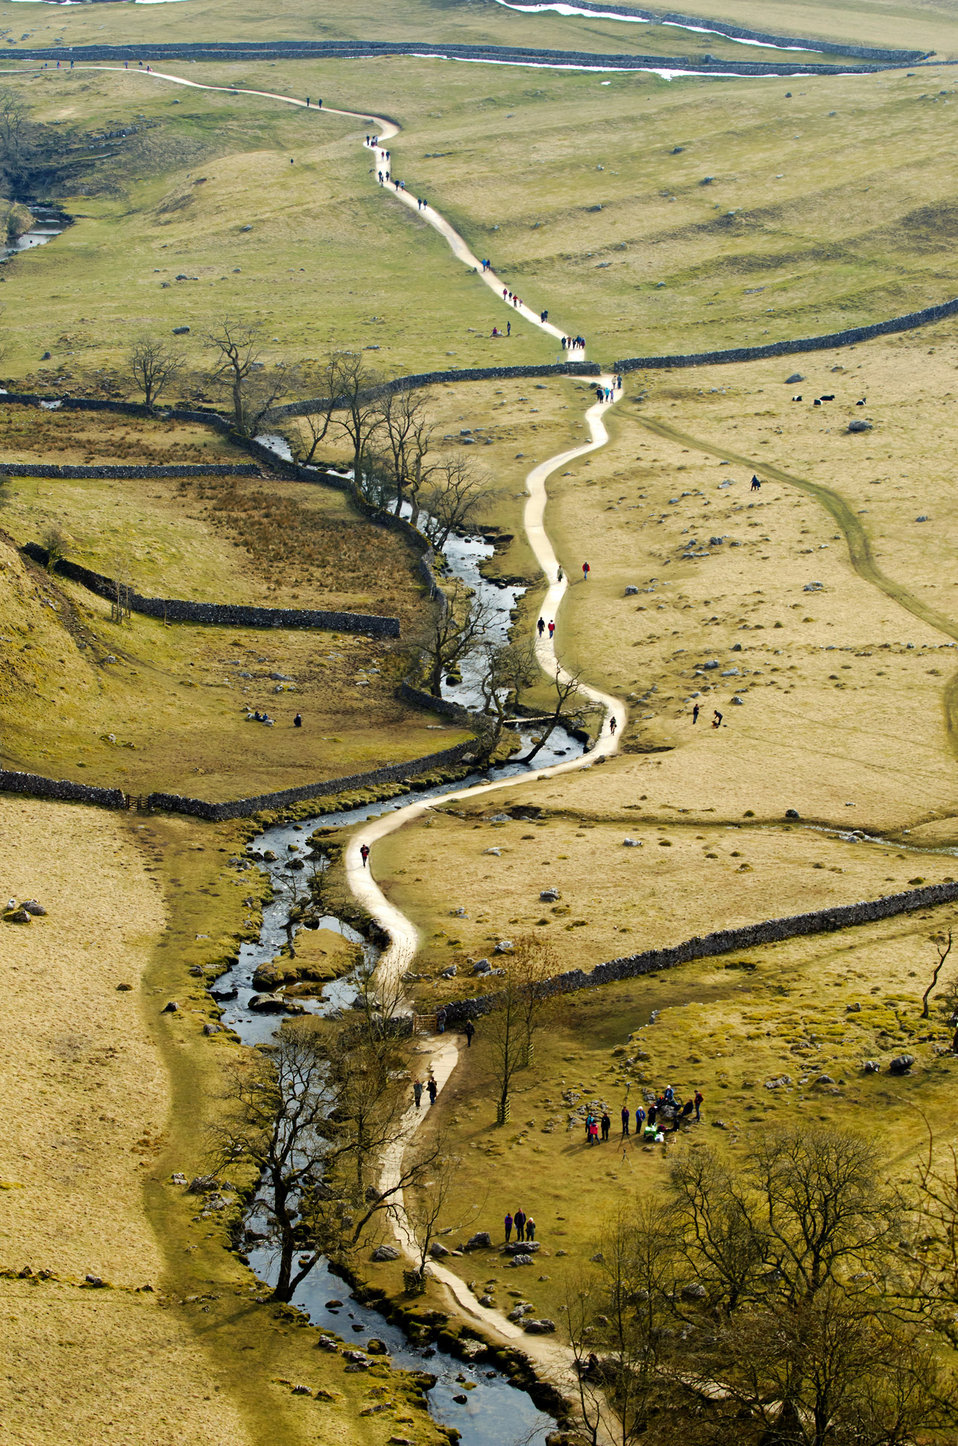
Landscape - north yorkshire.